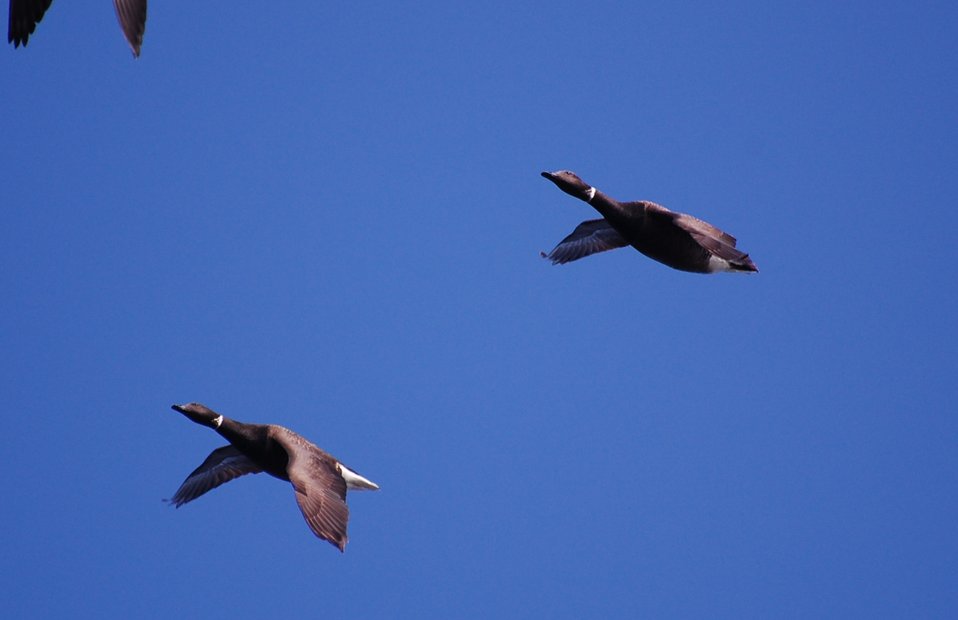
Brant at Izembek Lagoon

Izembek National Wildlife Refuge